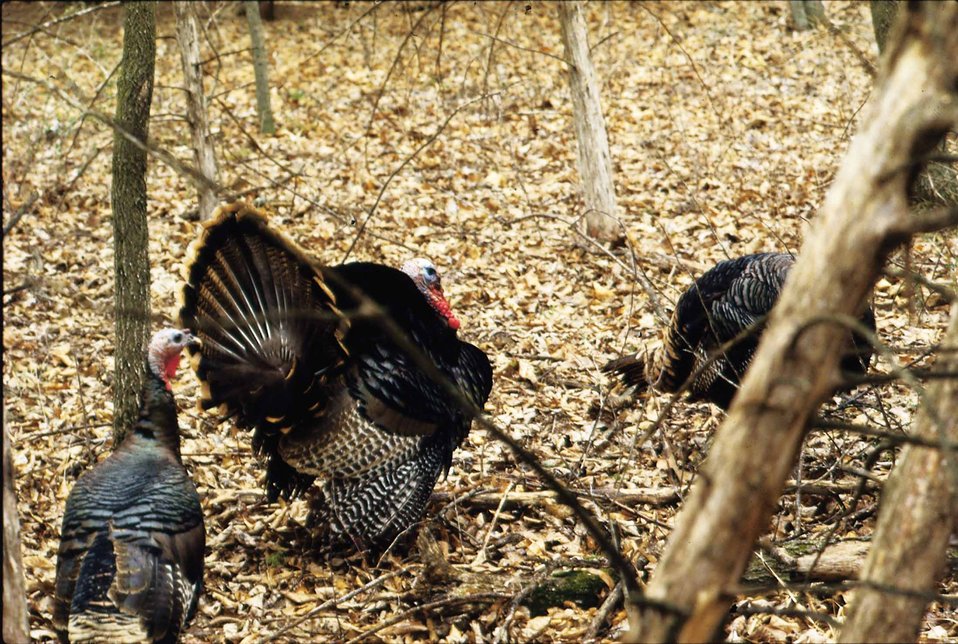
Wild turkeys in Van Buren County, Iowa. Wild turkeys have made a comeback in Iowa late in the 1900's, with efforts by private landowners and the Iowa Department of Natural Resources.